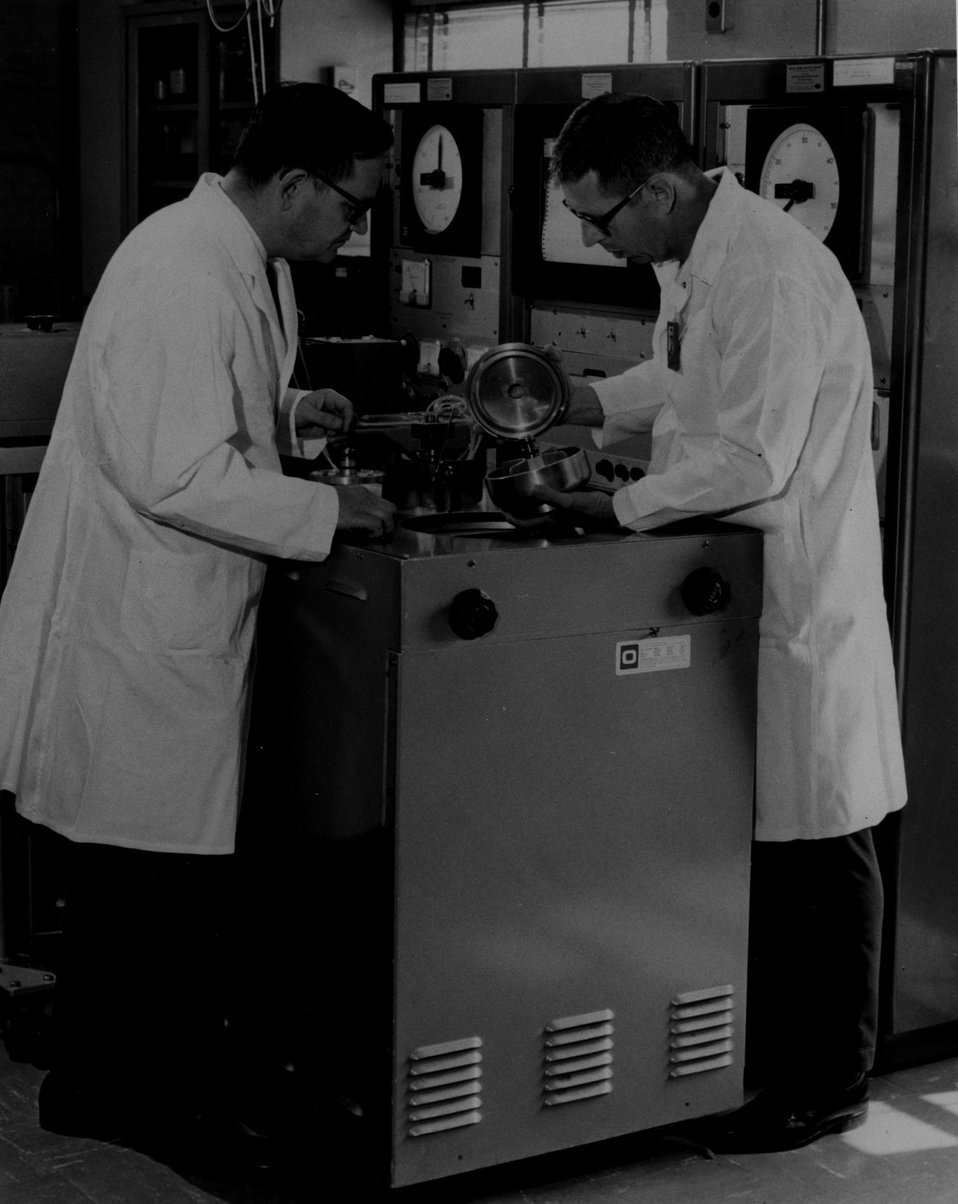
Centrifuge specialists discuss operation of an experimental titanium centrifuge rotor (unintelligible) fabricated in the Oak Ridge Gaseous Diffusion Plant for the joint AEC-NIH MAN Program. c. 1967